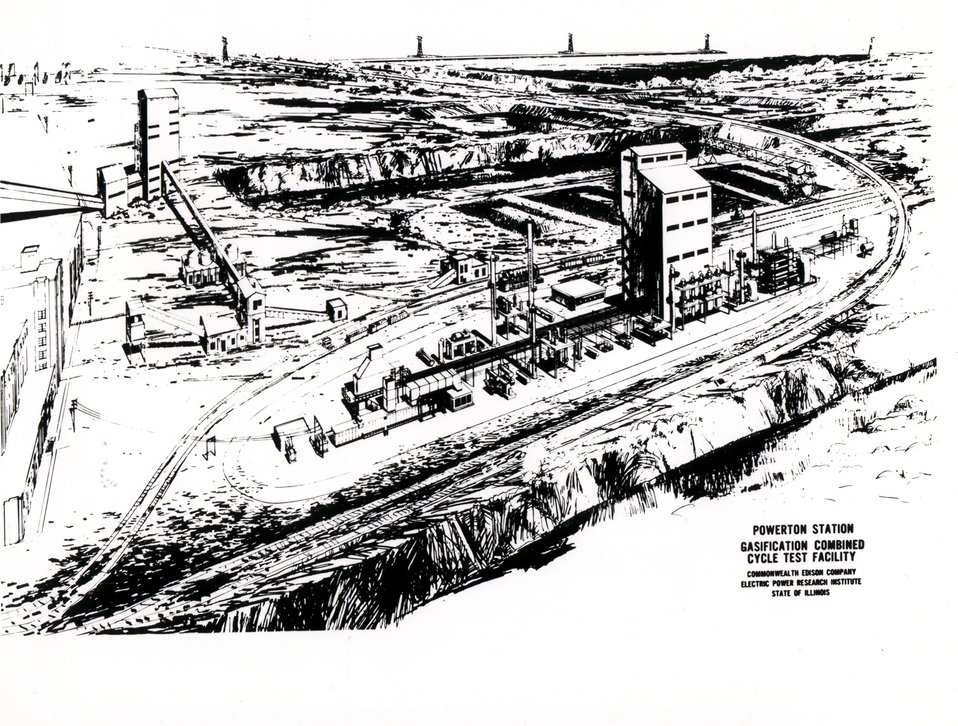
ERDA is negotiating with Commenwealth Edison, Chicago, to participate in the construction of a combined cycle coal gasification system. Circa 1976.